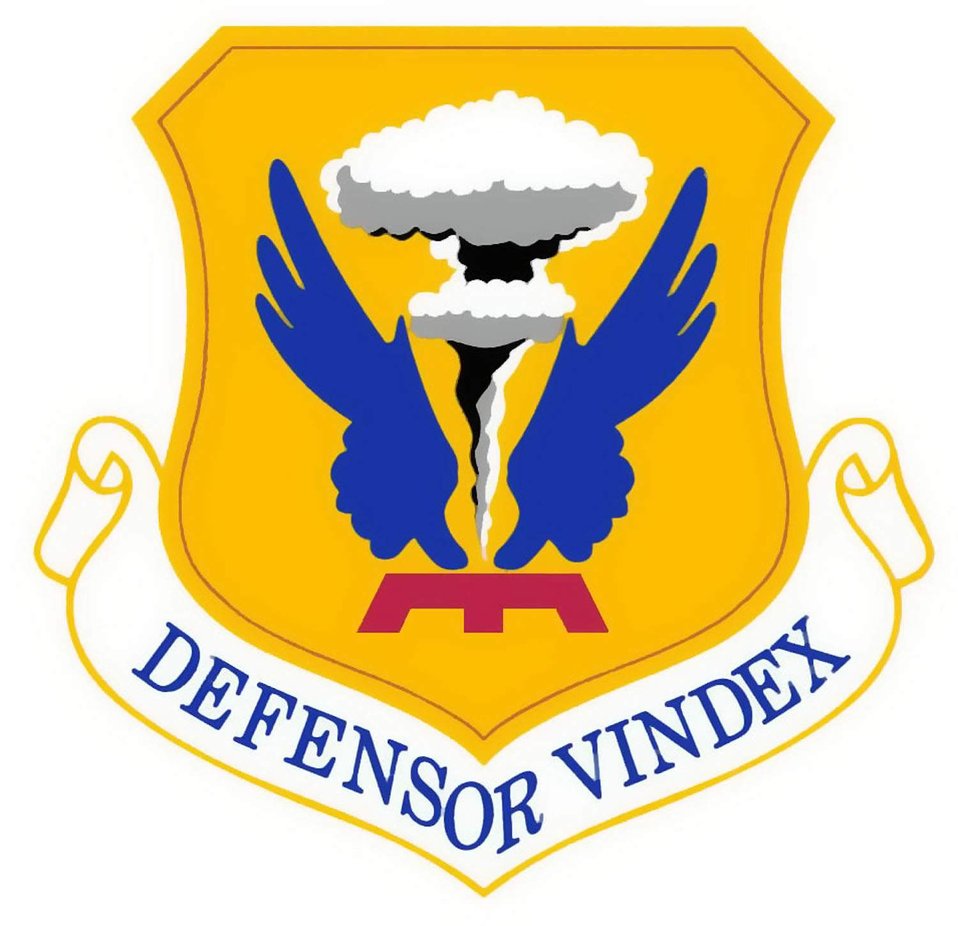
509th Bomb Wing shield